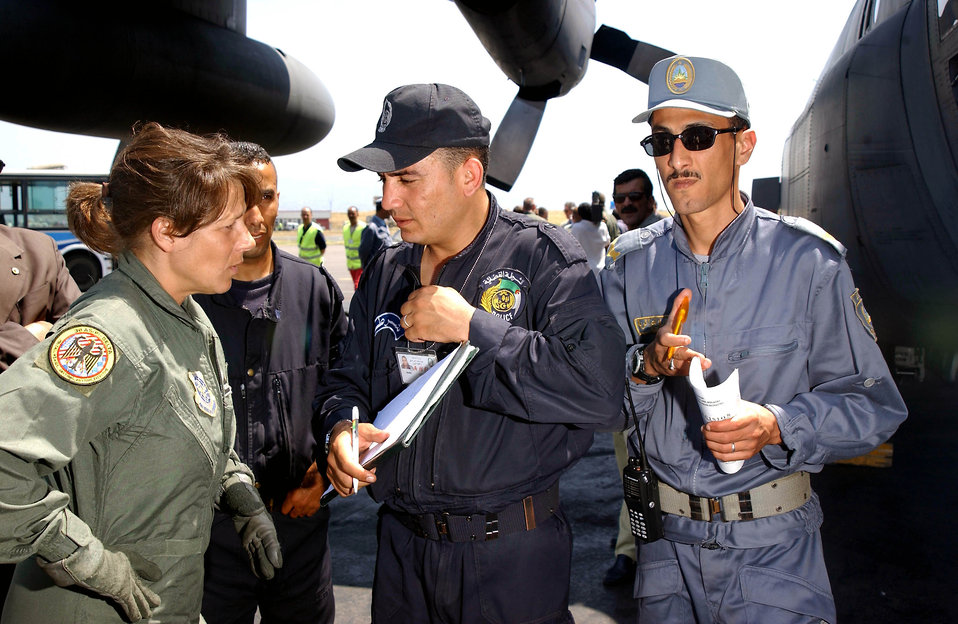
Helping earthquake victims

ALGIERS, Algeria -- Master Sgt. Christina Feliciano (left) talks with officials at the Houari Boumediene Airport here. Feliciano, a C-130 Hercules loadmaster, and her crew delivered 15,000 pounds of medical supplies, beds and tents to earthquake victims. The reservists are from the 773rd Airlift Squadron at Youngston, Ohio, and deployed to the 86th Airlift Wing at Ramstein Air Base, Germany.